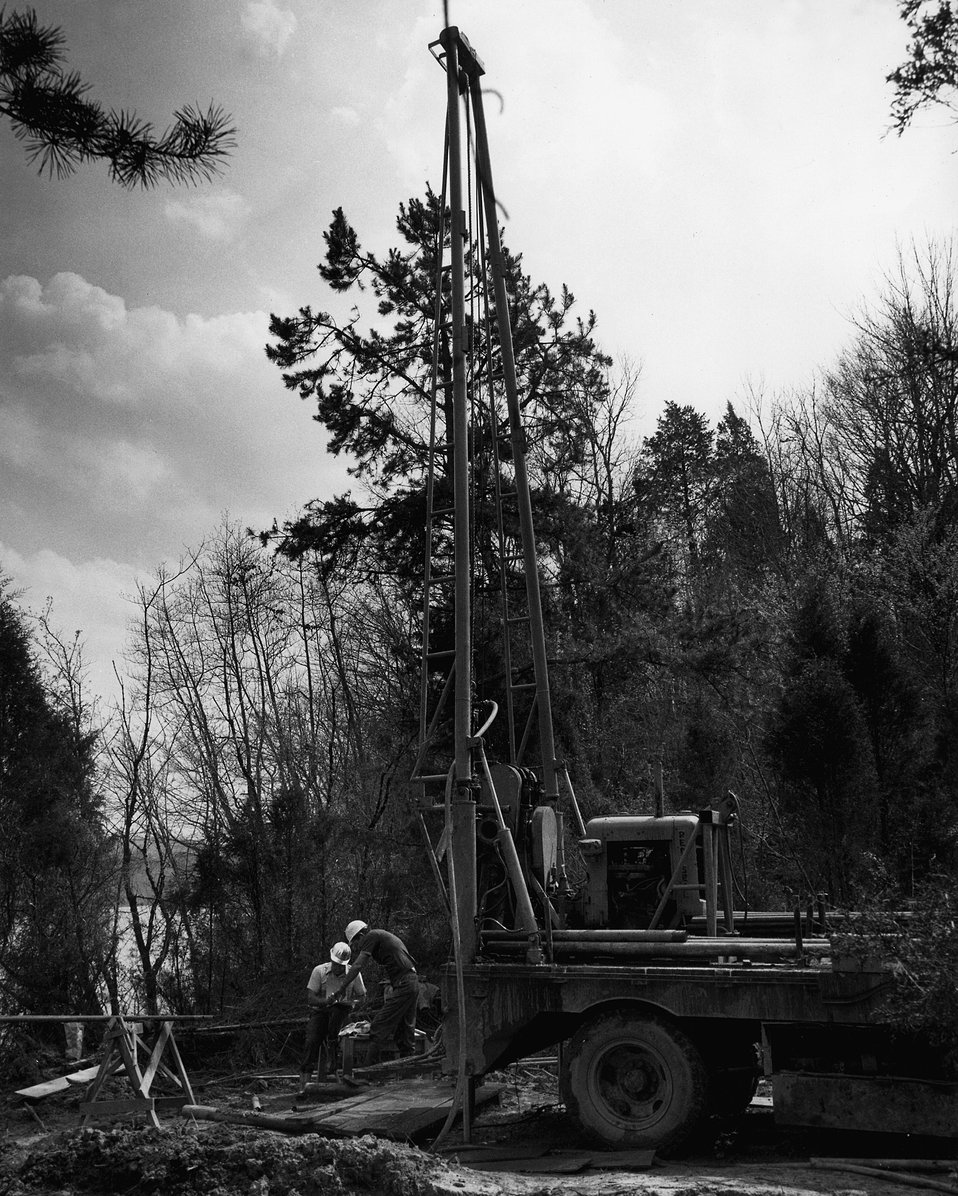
Drilling rig takes rock cores at the Clinch River Breeder Reactor Site in Oak Ridge, Tenn. c. 1974